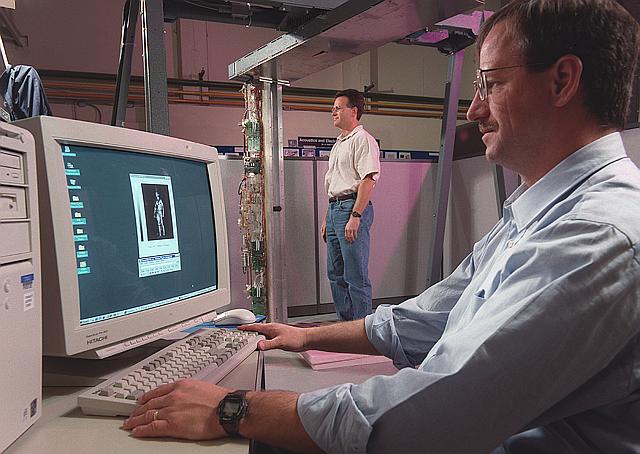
PACIFIC NORTHWEST NATIONAL LABORATORY DEVELOPED 3-D HOLO SCANNER TECHNOLOGY.

PNNL'S 3-D HOLO SCANNER TECHNOLOGY WAS DEVELOPED TO DETECT BODY WORN CONCEALED THREATS OR CONTRABAND.